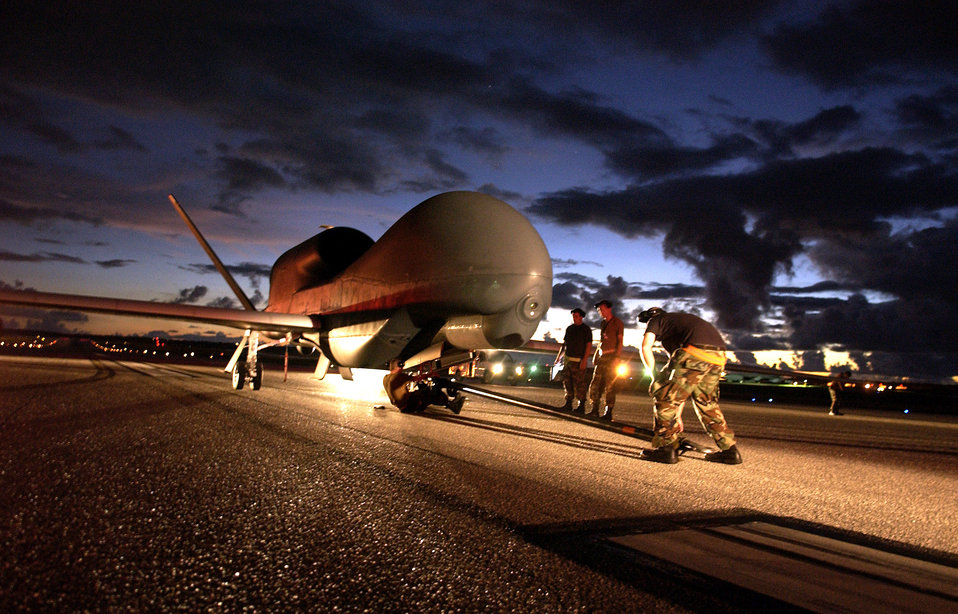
Joint unmanned aircraft system crosses Atlantic

A Global Hawk unmanned aircraft system from the 9th Reconnaissance Wing at Beale Air Force Base, Calif., made a trans-Atlantic flight Sept. 20 with the assistance of Navy officials. The 19-hour flight took off from Patuxent River Naval Air Station, Md., to Southwest Asia.